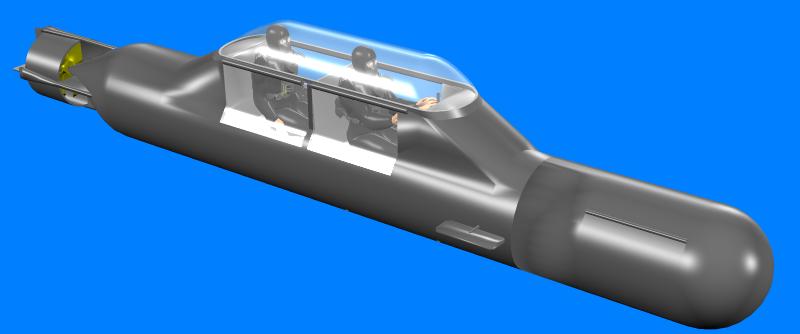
Roofed sit-inside divers' 'chariot'. 27 feet 9 inches (8.46 meters) long. Hull 3 feet 5 inches (1.04 meters) diameter ignoring hydroplanes.